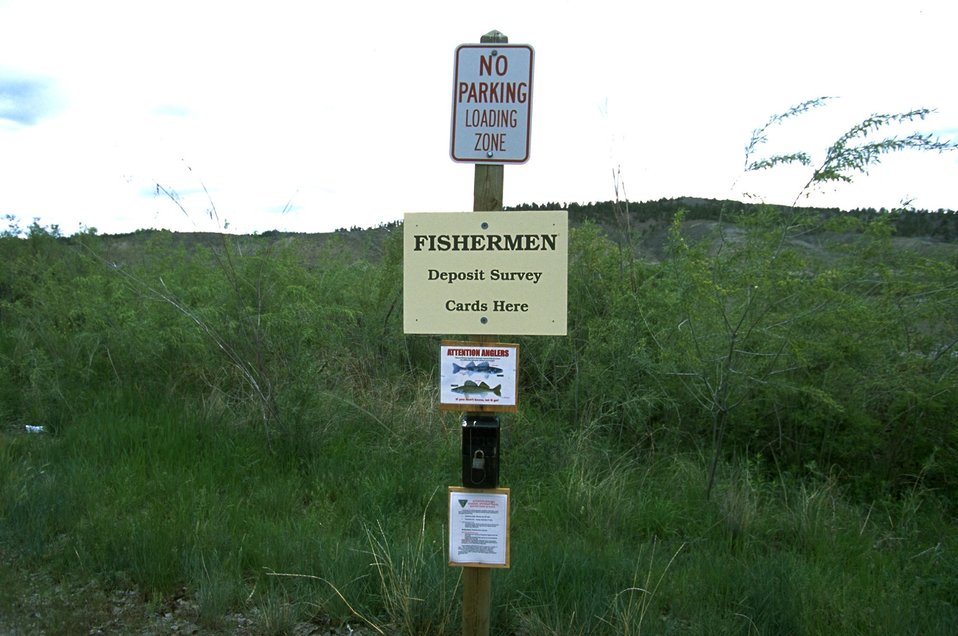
Visitor Information signs at Kipp Recreation Site